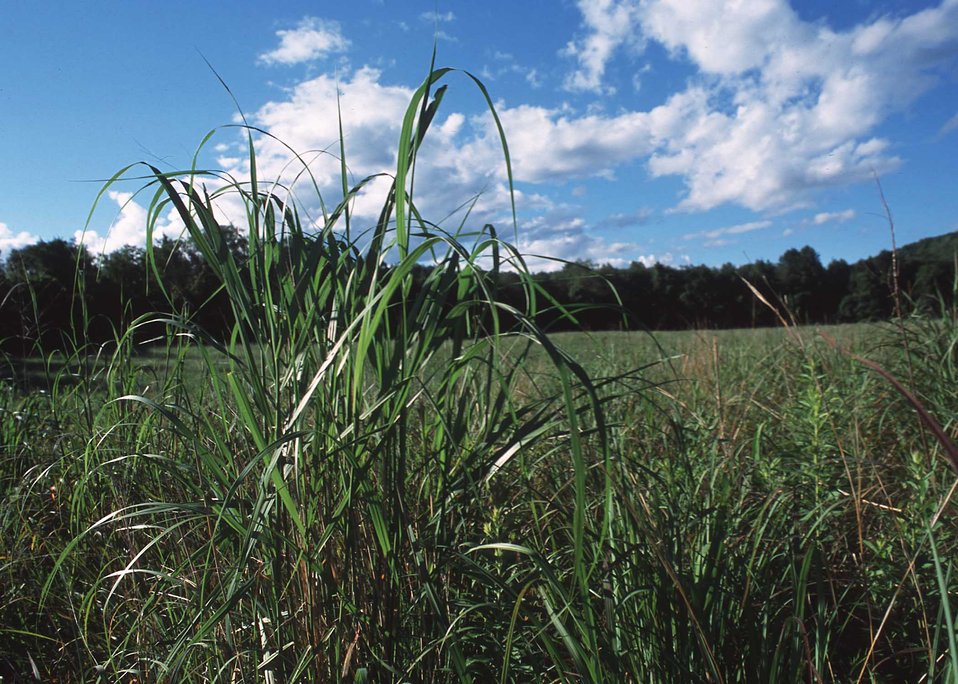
Warm season grassland habitat restoration in Litchfield County.